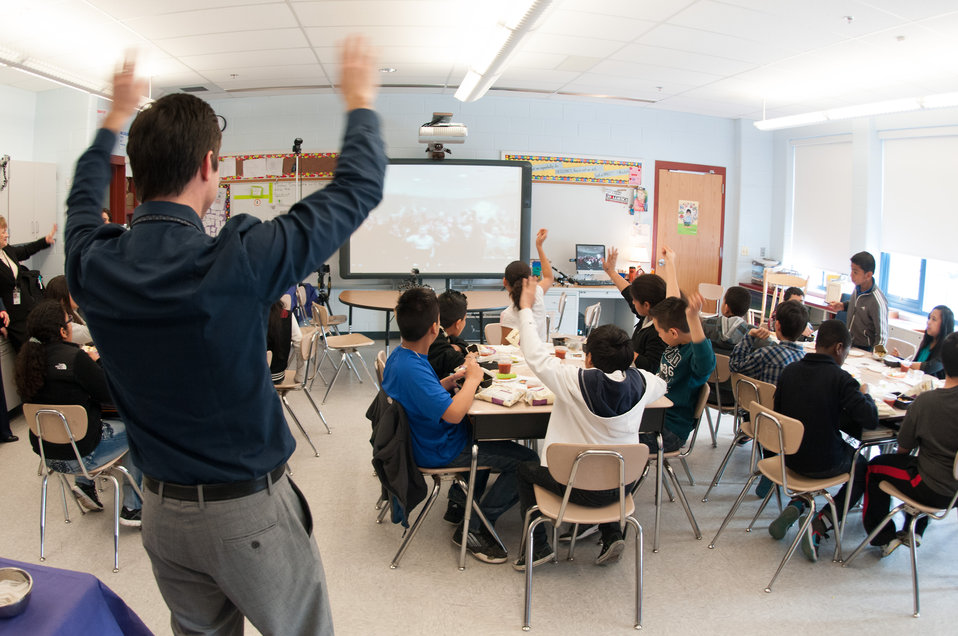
Harmony Hills Elementary School 5th graders wave hello to Dalry Primary School students in North Ayershire, Scotland, United Kingdom, at the beginning of a live overseas video conversation, during the inaugural International School Meals Day at Harmony Hills Elementary School in Silver Spring, MD, on Friday, March 8, 2013. Mr. Damien Grasso's 5th grade class was paired with Mrs. Karen McAllister’s class in Scotland. USDA's Food and Nutrition Service oversees the administration of 15 nutrition assistance programs that work in concert to form a national safety net against hunger. Learn more by visiting www.fns.usda.gov and twitter @USDANutrition.